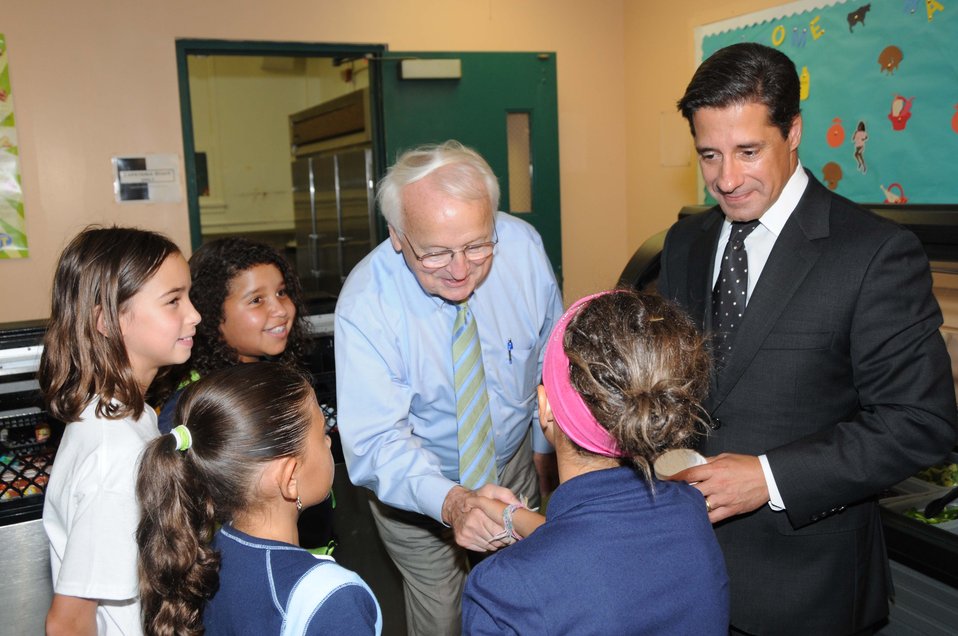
Under Secretary meets students

U.S. Department of Agriculture (USDA) Under Secretary for Food, Nutrition and Consumer Services Kevin Concannon (center) and Miami-Dade County School Superintendent Alberto Carvalho speak to students from North Beach Elementary School in Miami, FL on Aug. 23, 2012. Concannon was in Florida to recognize 177 schools in the Miami-Dade County Public Schools District for their efforts to promote good nutrition and physical activity to their students. All 177 schools achieved Bronze Awards in the Healthier US School Challenge (HUSSC). HUSSC is a key part of the First Lady’s Let’s Move! initiative to end childhood obesity in a generation. The Challenge is a voluntary commitment to meet USDA’s rigorous standards for physical activity, nutritious meals and nutrition education.